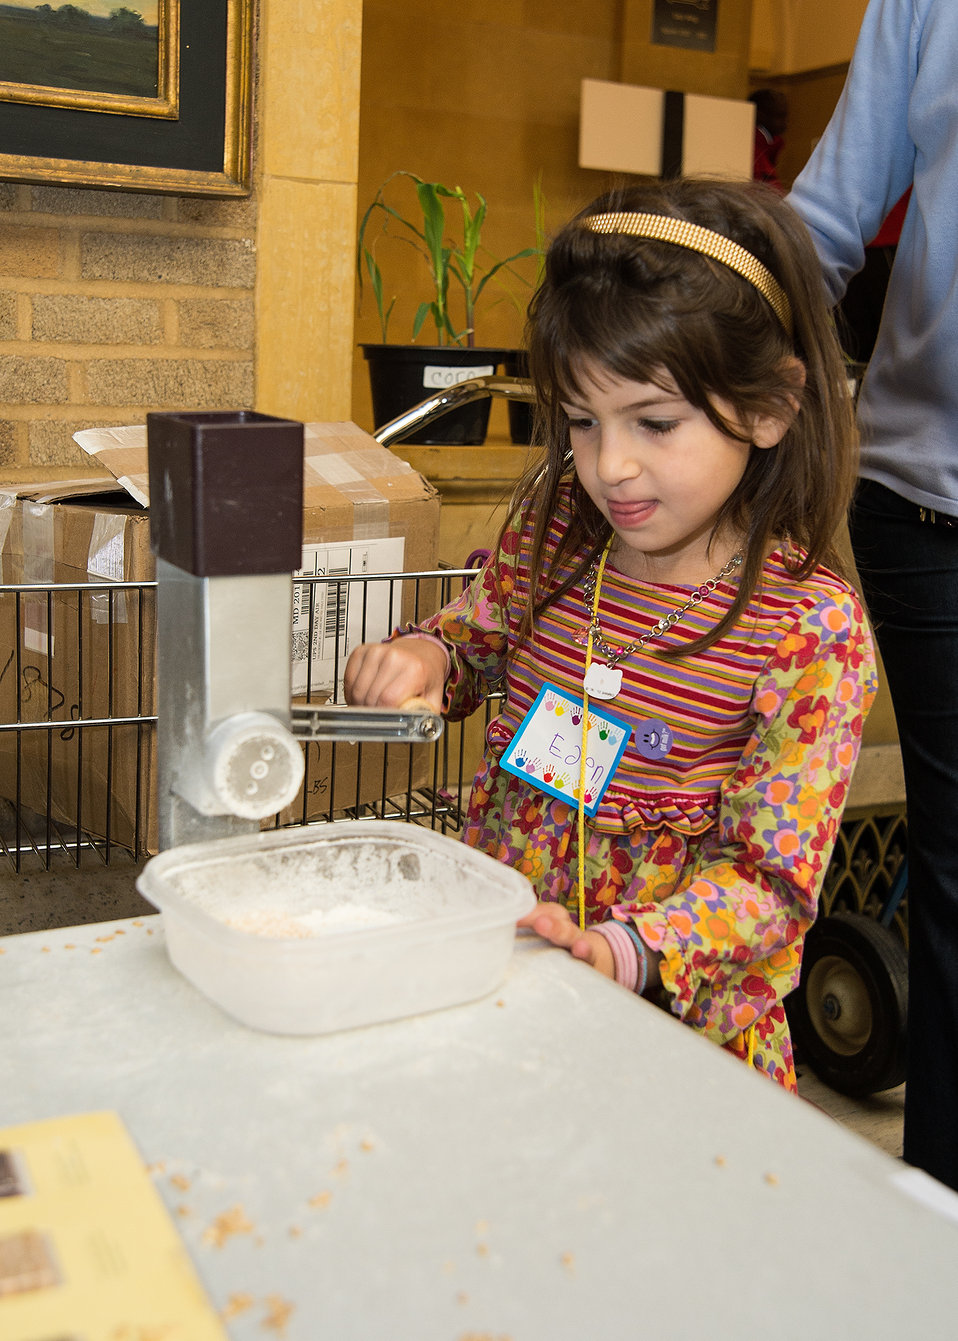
Eden Bernstein grinds her own flour from wheat kernels at the U.S. Department of Agriculture (USDA) Federal Grain Inspection and Stockyards Agency (FGIS) booth at USDA's annual “Bring Your Daughters and Sons to Work on Thursday, Apr. 24, 2014 in Washington, D.C. Eden’s mother Sigal Bernstein works for the USDA Foreign Agriculture Service (FAS). The event offers employees the opportunity to bring their children to work to experience what they do in their profession and offer insight into other careers at the Department of Agriculture.